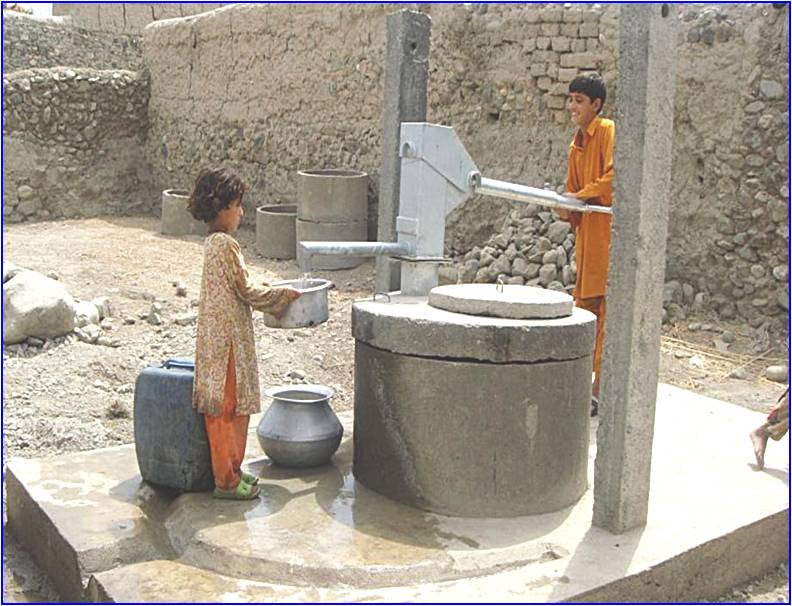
Water Pipes Ease Conflict Between Villages

Where water is scarce, rural Afghan communities often have to compete with their neighbors for the vital resource leading to tension between communities. Four small Kunar Province vil-lages with a long history of conflict were brought together by a USAID-funded pipe scheme that has increased access to clean water and removed many of the causes of discord between these communities.
Naveh Village, comprised of four smaller villages, is located approximately three kilometers from Pakistan in the Nawa Pass, a major border-crossing point. The four small villages rely on terraced subsistence farming fed by small mountain springs that occasionally run dry. Prior to USAID’s assistance, only one of the small villages had a rudimentary pipe scheme, and most of the local women walked long distances through mountainous terrain to reach the closest water source.
Through its Local Governance and Community Development (LGCD) program, USAID provided funding to help Naveh vil-lage construct a three-kilometer pipe scheme to deliver water to all four small villages. After seeing how collaboration on the pipe scheme benefitted the entire community, the four small villages moved to work together on other community develop-ment projects, including a provincial road project. The road will help link the communities to economic opportunities offered by their proximity to Nawa Pass, which will become a major official border crossing within the next year following completion of a paved road.
Through implementation of a range of development activities designed to strengthen sub-national Afghan government struc-tures in Kunar Province, USAID is supporting stabilization and empowering Afghans to manage their own development. Fu-ture LGCD projects will continue to engage communities in the selection and implementation of small-scale development activi-ties, and will be designed to foster stronger ties between these communities and their local government bodies.